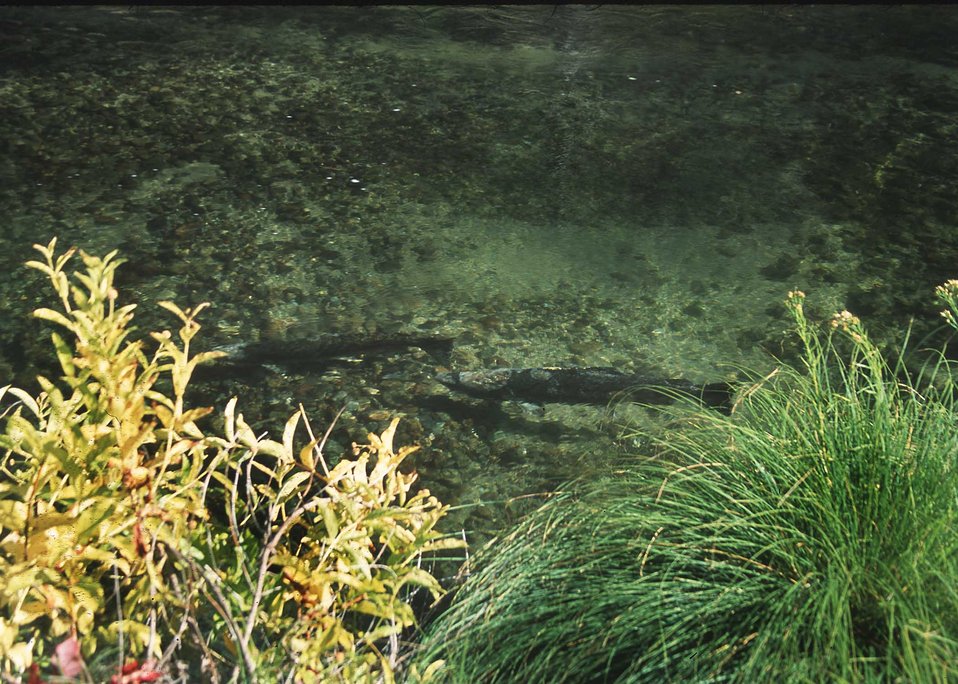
Salmon rests during migration journey.